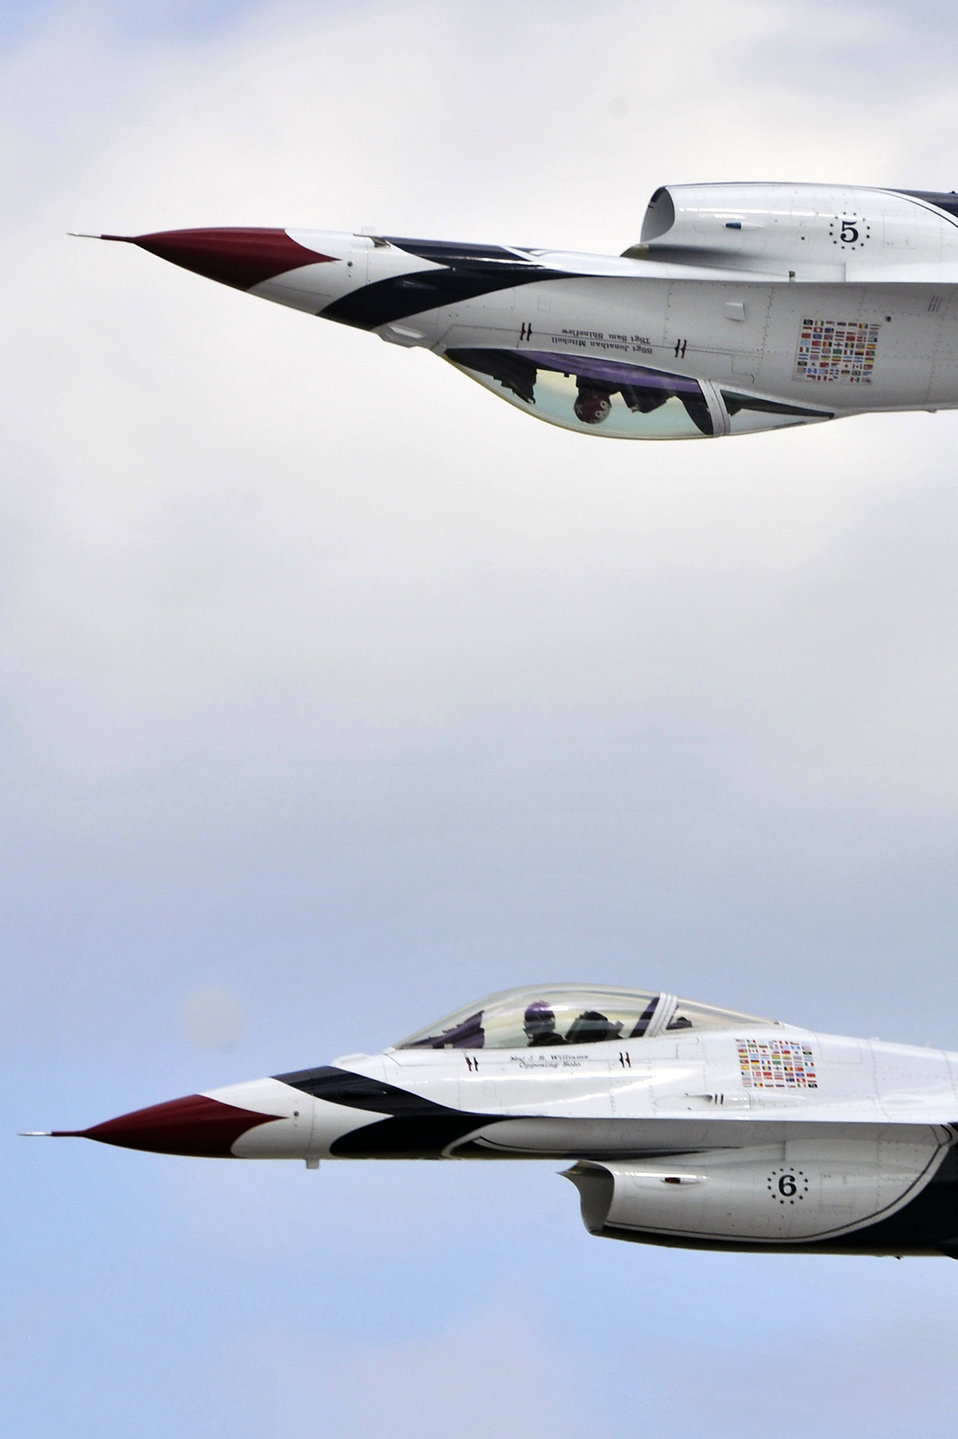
Mirror image

The Thunderbirds perform May 21, 2011, during the 2011 Joint Service Open House at Joint Base Andrews, Md.